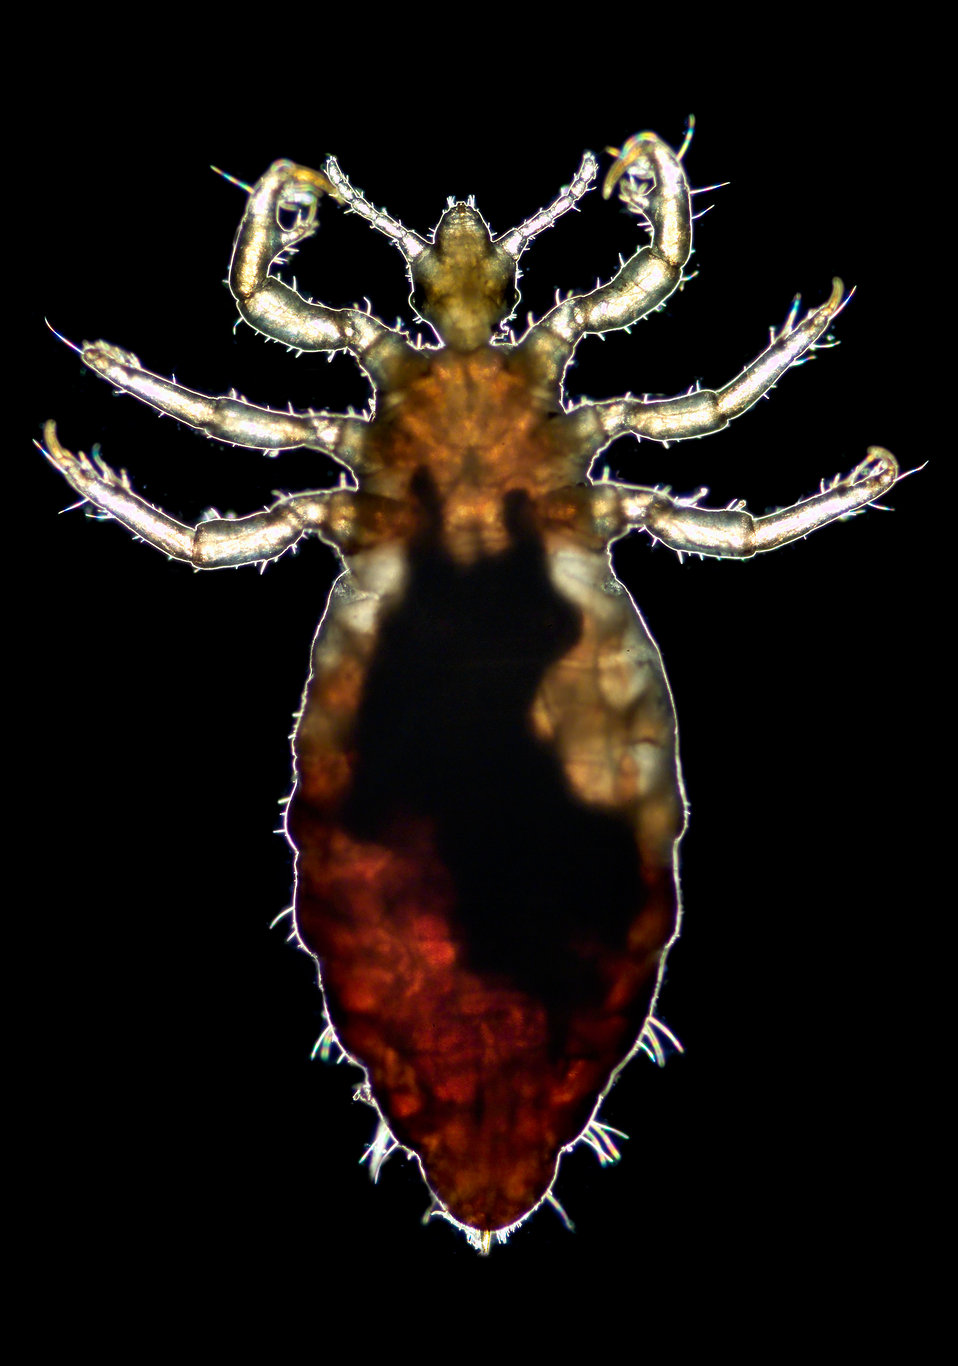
This 2006 photograph depicted a ventral view of a male body louse, Pediculus humanus var. corporis. Its counterpart, the dorsal view may be seen in PHIL# 9217. Some of the external morphologic features displayed by members of the genus Pediculus include an elongated abdominal region without any processes, and three pairs of legs, all equal in length and width. The distal tip of the male's abdomen is rounded, whereas, the female's (PHIL# 9202) is concave.Body lice are parasitic insects that live on the body, and in the clothing or bedding of infested humans. Infestation is common, found worldwide, and affects people of all races. The dark mass inside the abdomen is a previously ingested blood meal, obtained by the louse when the photographer offered his arm to the insect on which it fed.